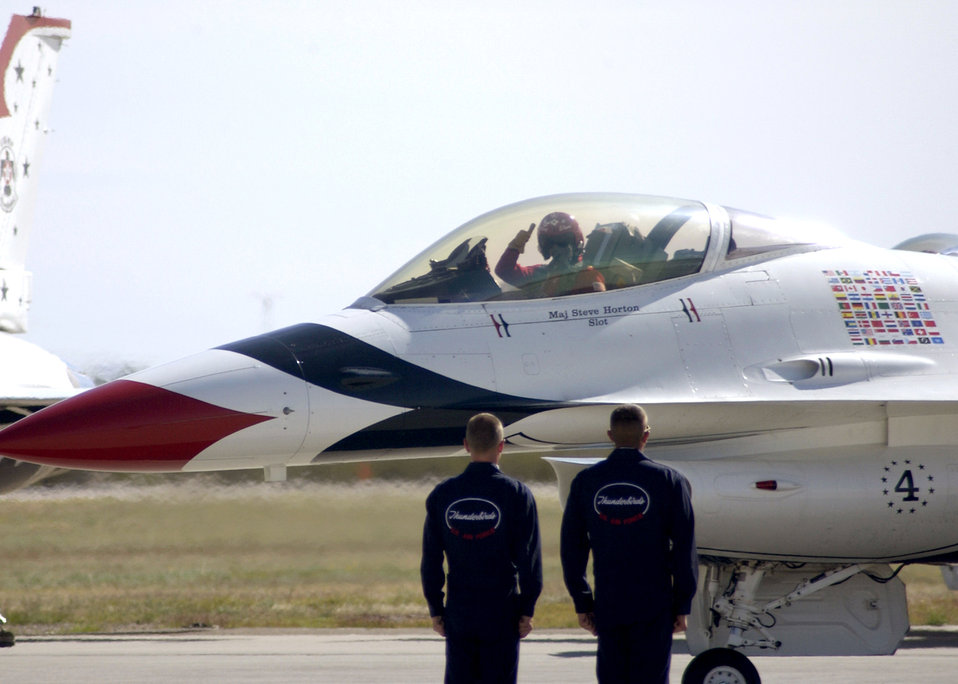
Thunderbirds

DAVIS-MONTHAN AIR FORCE BASE, Ariz. - Thunderbird pilot, Major Steven P. Horton gives a